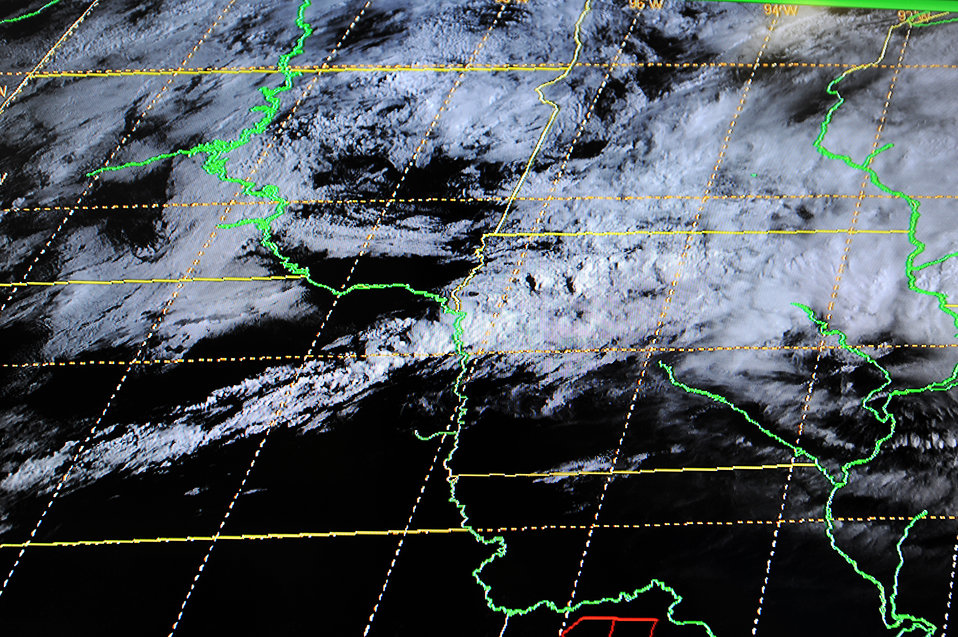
Eyes of the storm

A storm moves through the central United States, possibly in the flight path of departing and arriving air traffic at Whiteman Air Force Base, Mo. Weather forecasters at Whiteman AFB keep a close eye on radar and satellite images of the local area, as well as around the world.